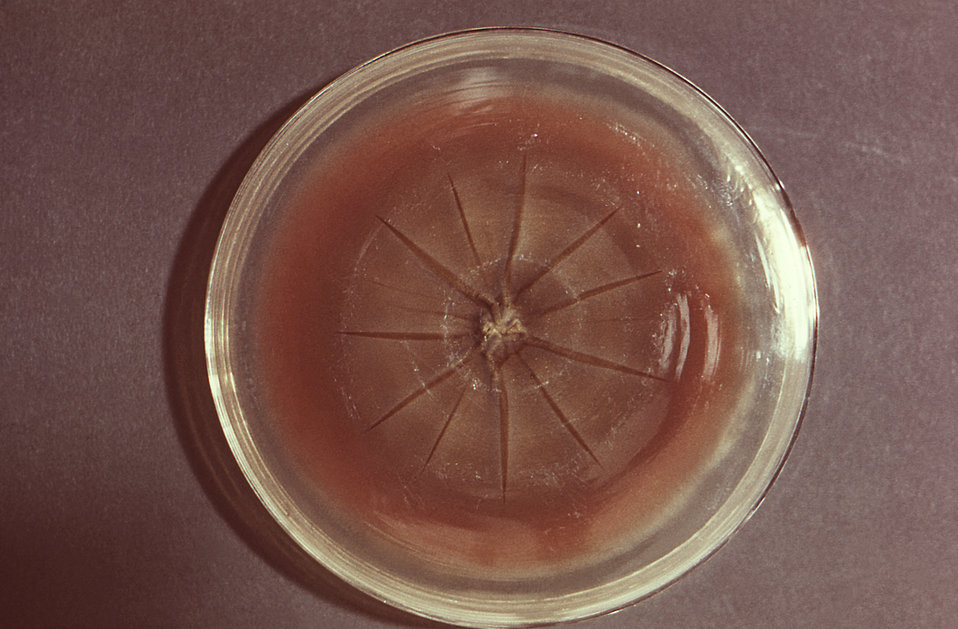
Seen from the back, or reverse side, this image depicts a Petri dish containing an agar growth medium, on which a single large anthropophilic colony of Trychophyton megninii, strain A-302, fungal organisms had taken shape Note the reddish-orange coloration of this colony from this reverse view. This dermatophyte causes fungal infections in humans involving the skin, hair, and nails. PHIL 14948, 14949, 14951, and 14952 depict a frontal view of a T. megninii fungal colony revealing its characteristic glabrous (smooth), slightly-ruffled surface, and an off-white to beige coloration.